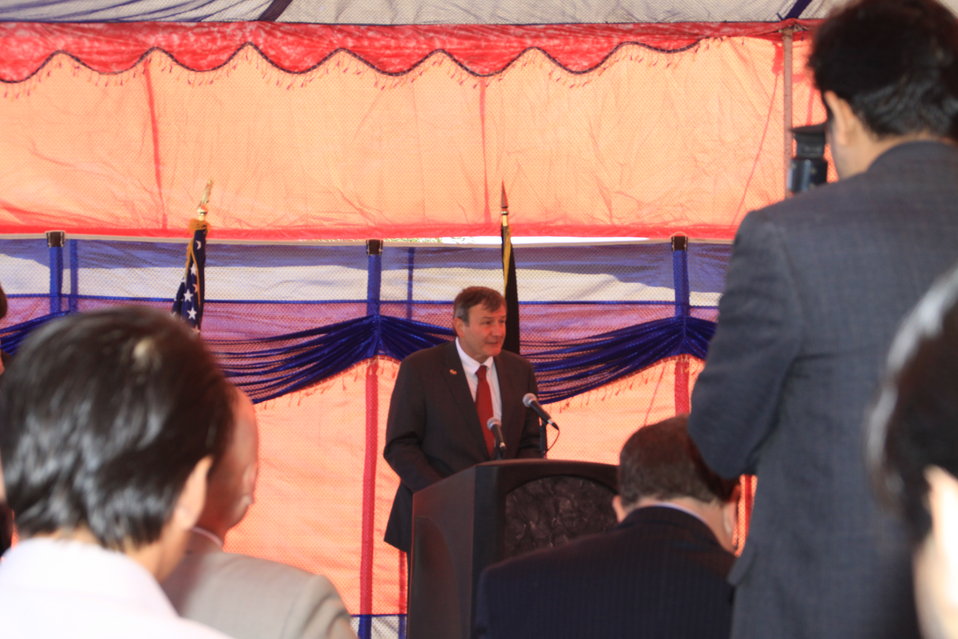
AVIPA Plus Wheat Seed Distribution 101005

US Ambassador Karl Eikenberry and USAID Acting Mission Director Kevin Brownawell joined the Minister of Agriculture, Irrigation and Livestock, H.E. Minister Mohammed Rahimi in signing a Memorandum of Understanding and distributing vouchers to area farmers for wheat and fertilizer.

US Ambassador Karl Eikenberry and USAID Acting Mission Director Kevin Brownawell joined the Minister of Agriculture, Irrigation and Livestock, H.E. Minister Mohammed Rahimi in signing a Memorandum of Understanding and distributing vouchers to area farmers for wheat and fertilizer.